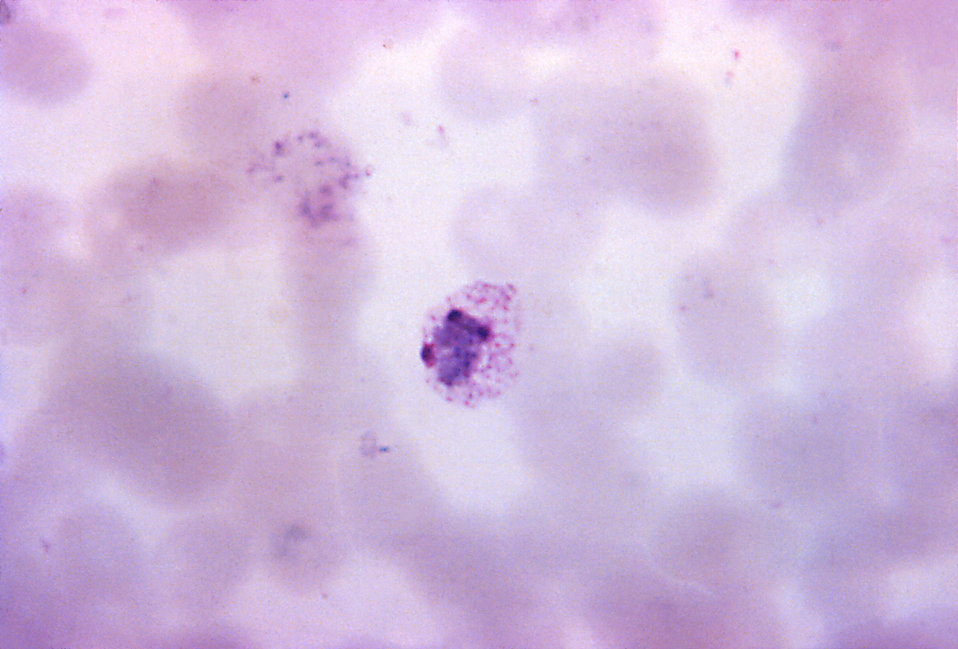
This thin film micrograph depicts an immature Plasmodium vivax schizont with three chromatin masses; Mag 1125X.